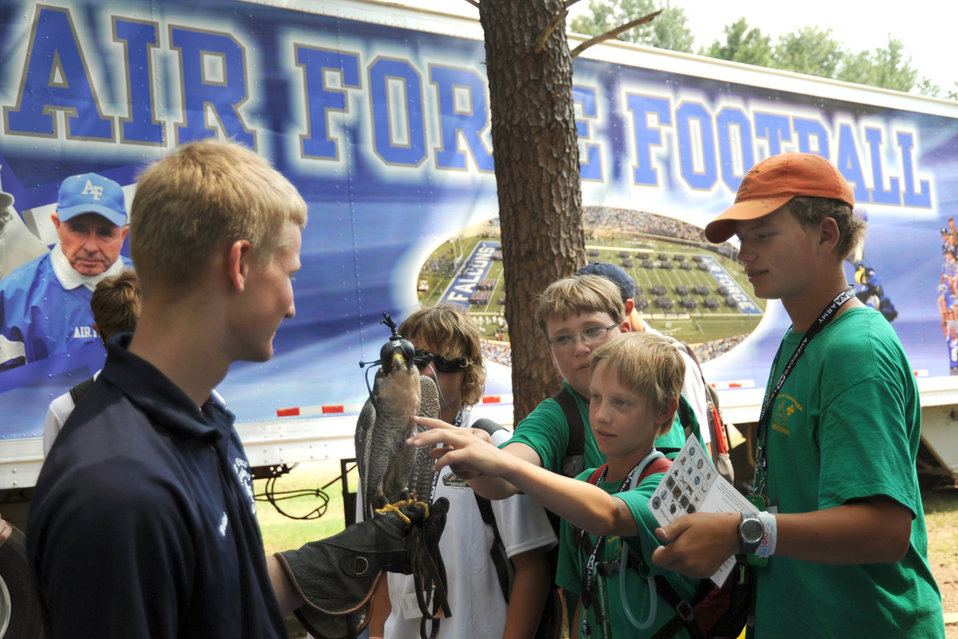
2010 National Scout Jamboree

Air Force Academy Cadet Nathan Lebens shows Academy mascot Havoc, a 14-year-old peregrine falcon, to Boy Scouts attending the 100th National Scout Jamboree taking place at Fort A.P. Hill, Va., July 26 through Aug. 4. Approximately 46,000 Boy Scouts are attending the Jamboree.